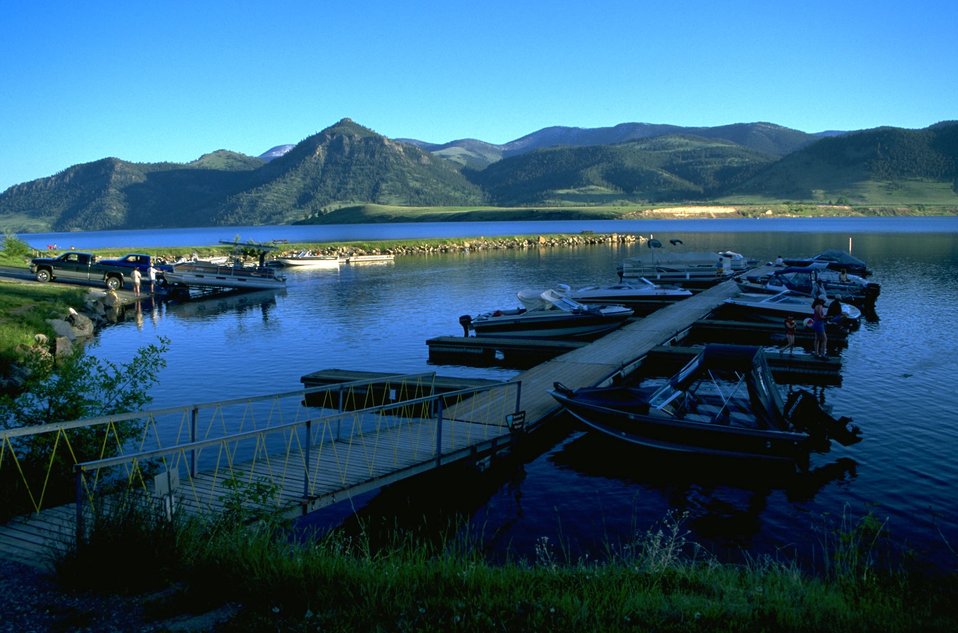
Boats at the Marina at Holter Lake in the late afternoon light